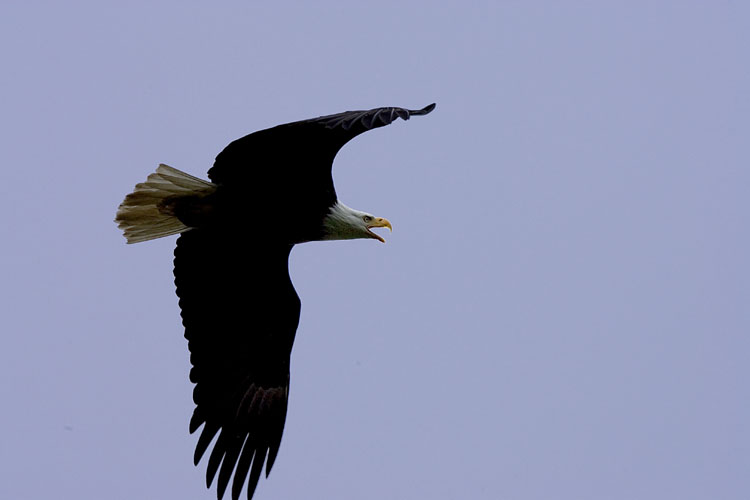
KOD Hildebrand (1)

Kodiak National Wildlife Refuge- Wildlife